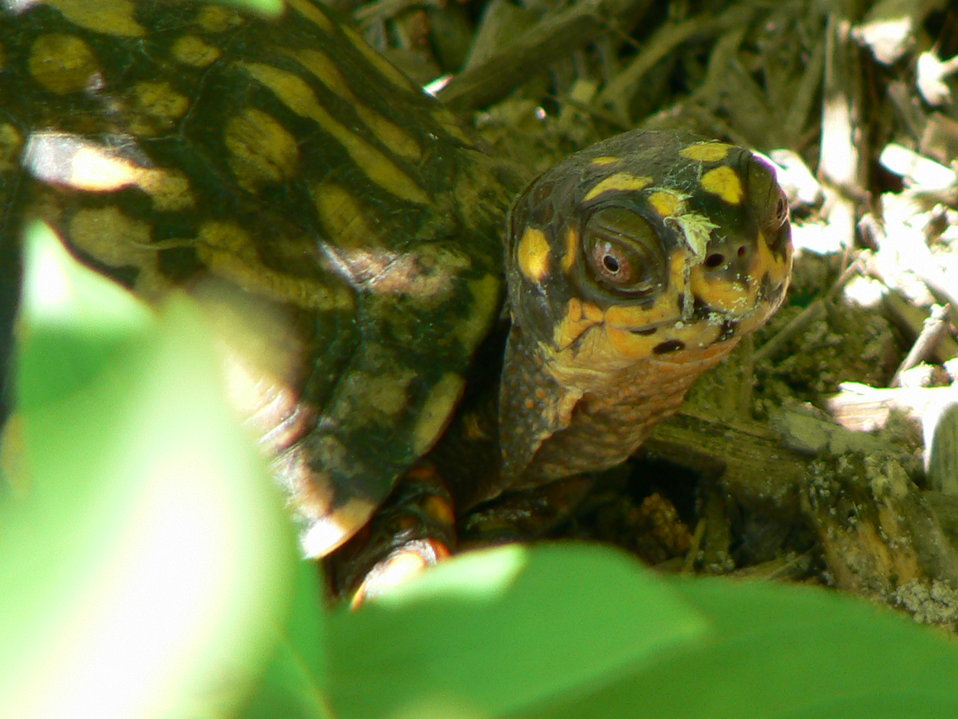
Box turtle at Cape May National Wildlife Refuge.